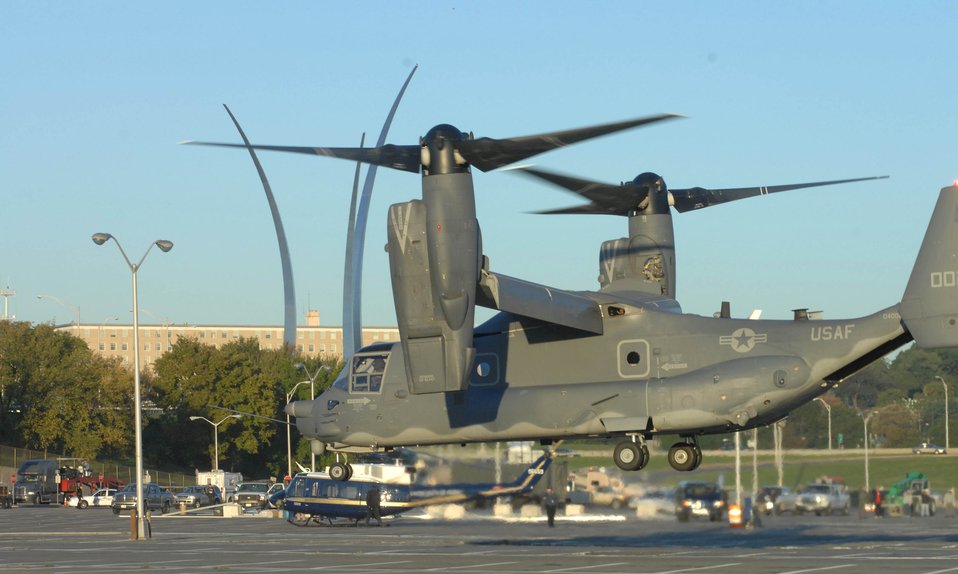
CV-22 Osprey flyover at Air Force Memorial

A CV-22 Osprey tilt rotor aircraft prepares to land at the Pentagon Oct. 13 in Arlington, Va. Aircraft including the CV-22 are landing at the Pentagon south parking lot and will be on display during the Air Force open house for the opening ceremonies of the Air Force Memorial Oct. 14.